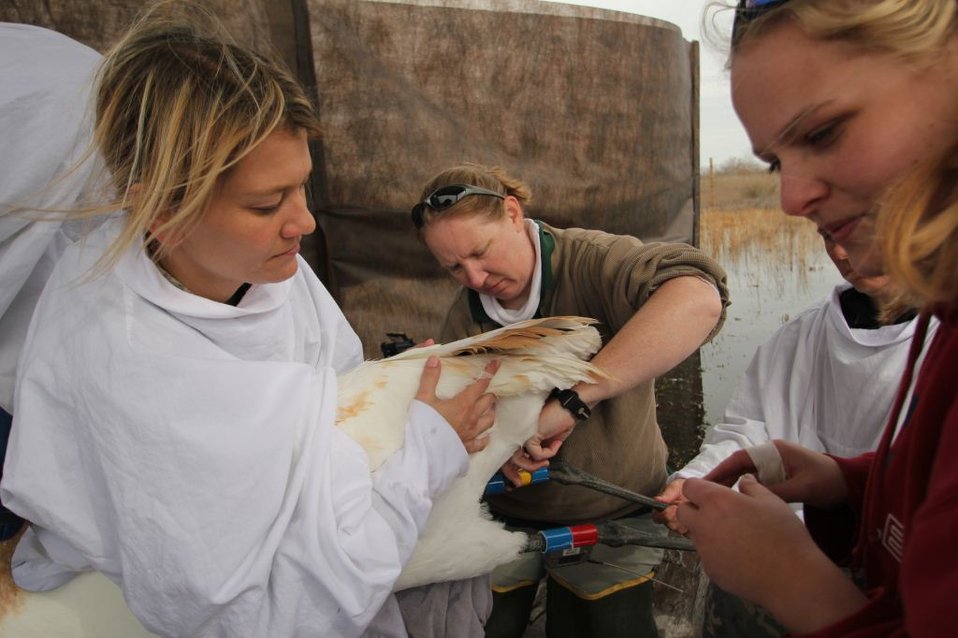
Whooping Crane Banding

Each bird gets a unique combination of color bands and color coded transmitters that allow scientists to track and monitor as well as identify each individual as they disperse away from the release pen site.